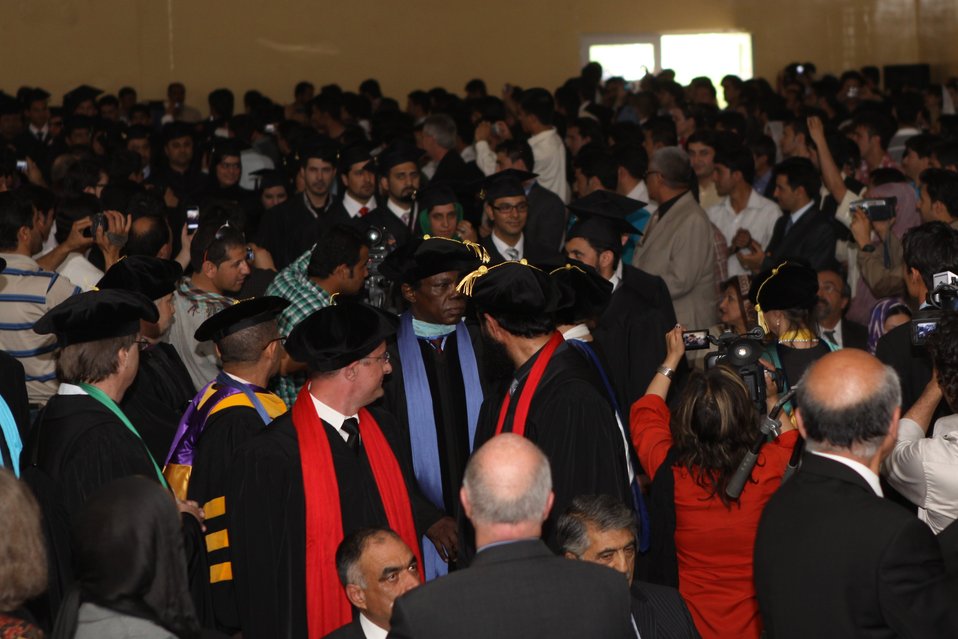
100526 AUAF Graduation 131